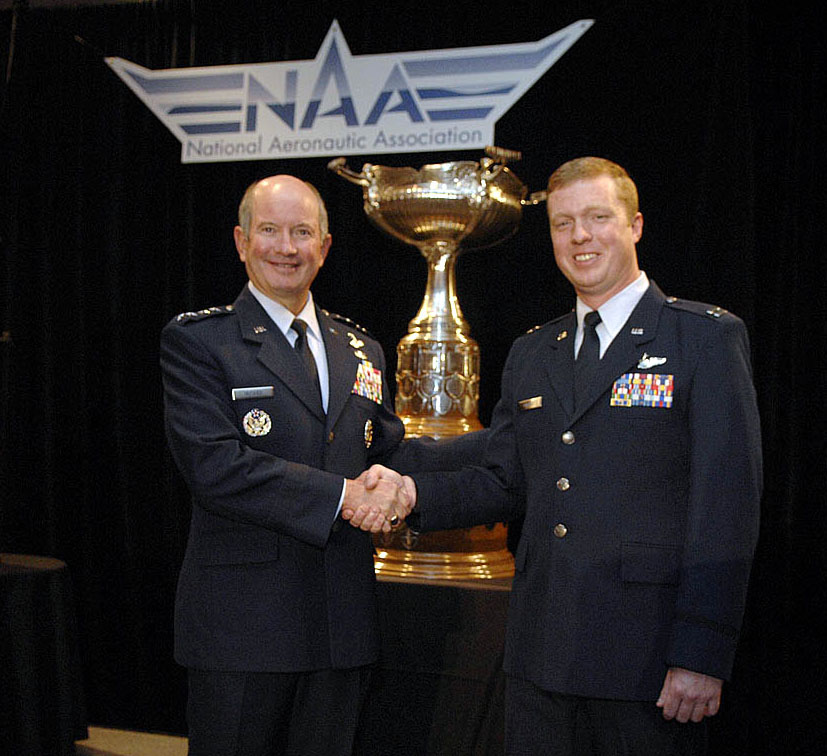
A-10 pilot awarded Mackay Trophy

Air Force Vice Chief of Staff Gen. Duncan J. McNabb presented Capt. Scott Markle the Clarence Mackay Trophy during a ceremony Oct. 29 in Arlington, Va. Air Force and National Aeronautic Association officials present the award to Airmen or an organization involved in the most meritorious flight of the year. Captain Markle an A-10 Thunderbolt II pilot from the 81st Fighter Squadron at Spangdahlem Air Base, Germany.